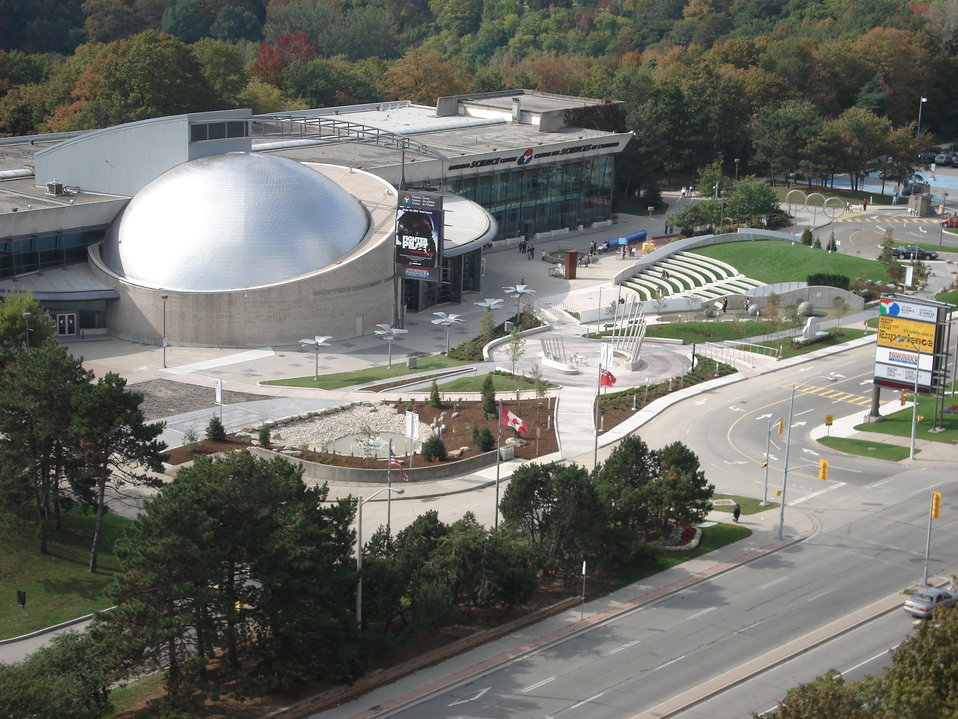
Image of the Ontario Science Centre taken on Monday, September 23, 2006. Taken by myself. Completed Teluscape. A series of pathways, including a water walkway, extend radially from the water pipe organ (fountain), which is the main centerpiece of Teluscape. The circular pathway around the pipe organ is known as 'Centennial Walkway'. The part of the main entrance passes between the two organ consoles (the two halves of the fountain) and organ pipes, and runs perpendicular to the water walkway.